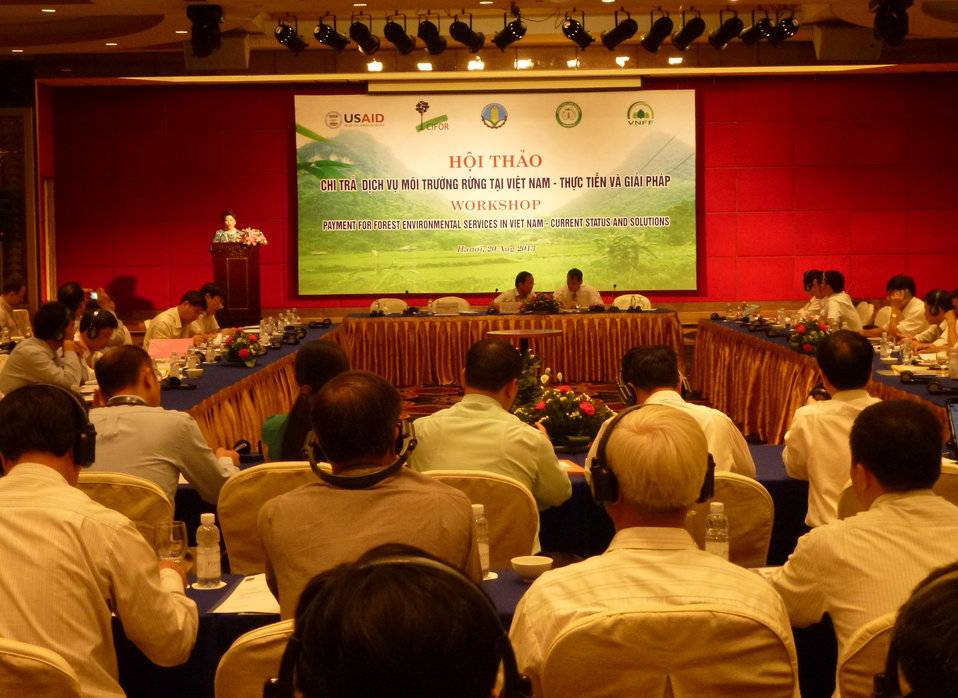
Payment for Forest Environmental Services Workshop

Hanoi, August 20, 2013